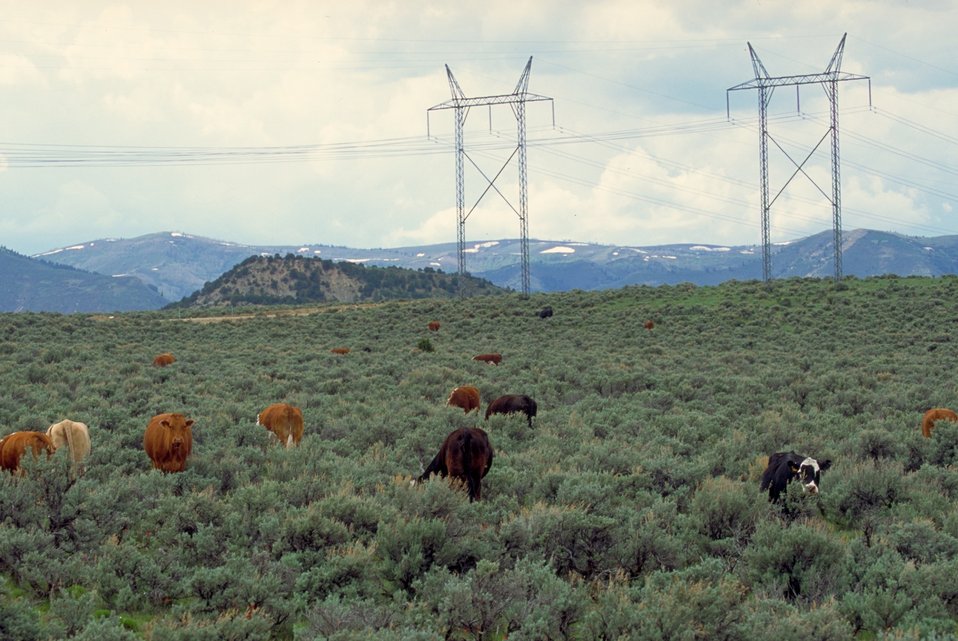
Livestock grazing on BLM lands near Price, Utah.